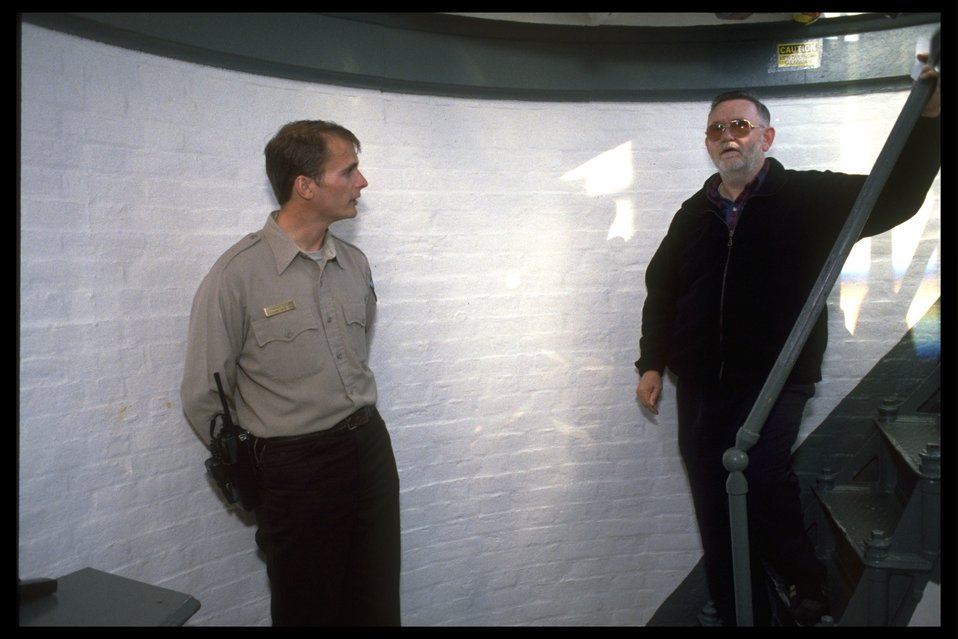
Inside of Yaquina Head Lighthouse.